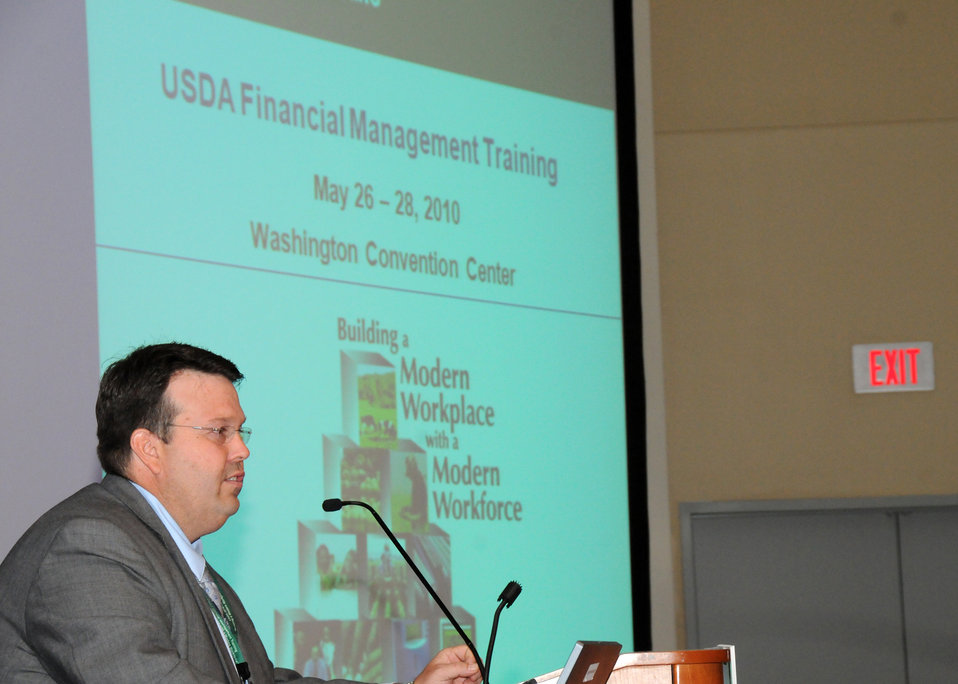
Agriculture Acting Chief Financial Officer John Holladay makes opening remarks at the Financial Management Training Conference held in Washington, D. C., on May 26, 2010. USDA photo 10di1371-38.